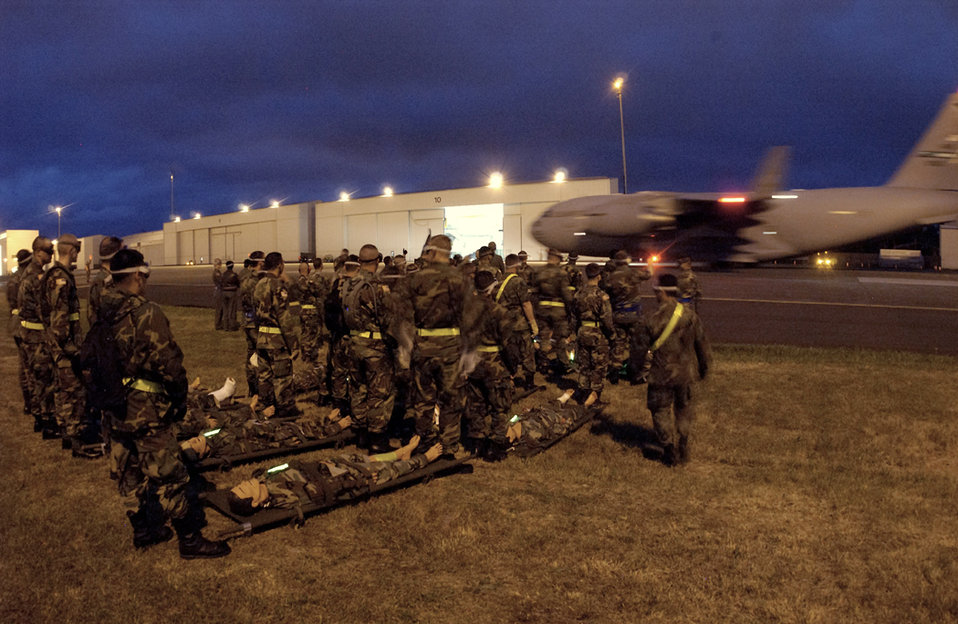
A day at the Rodeo

MCCHORD AIR FORCE BASE, Wash. -- Soldiers from nearby Fort Lewis wait for a C-17 Globemaster III to taxi into position during Rodeo 2005 here June 21. The Soldiers carried mannequins with simulated battle wounds onto the aircraft for a simulated aerial medical evacuation.